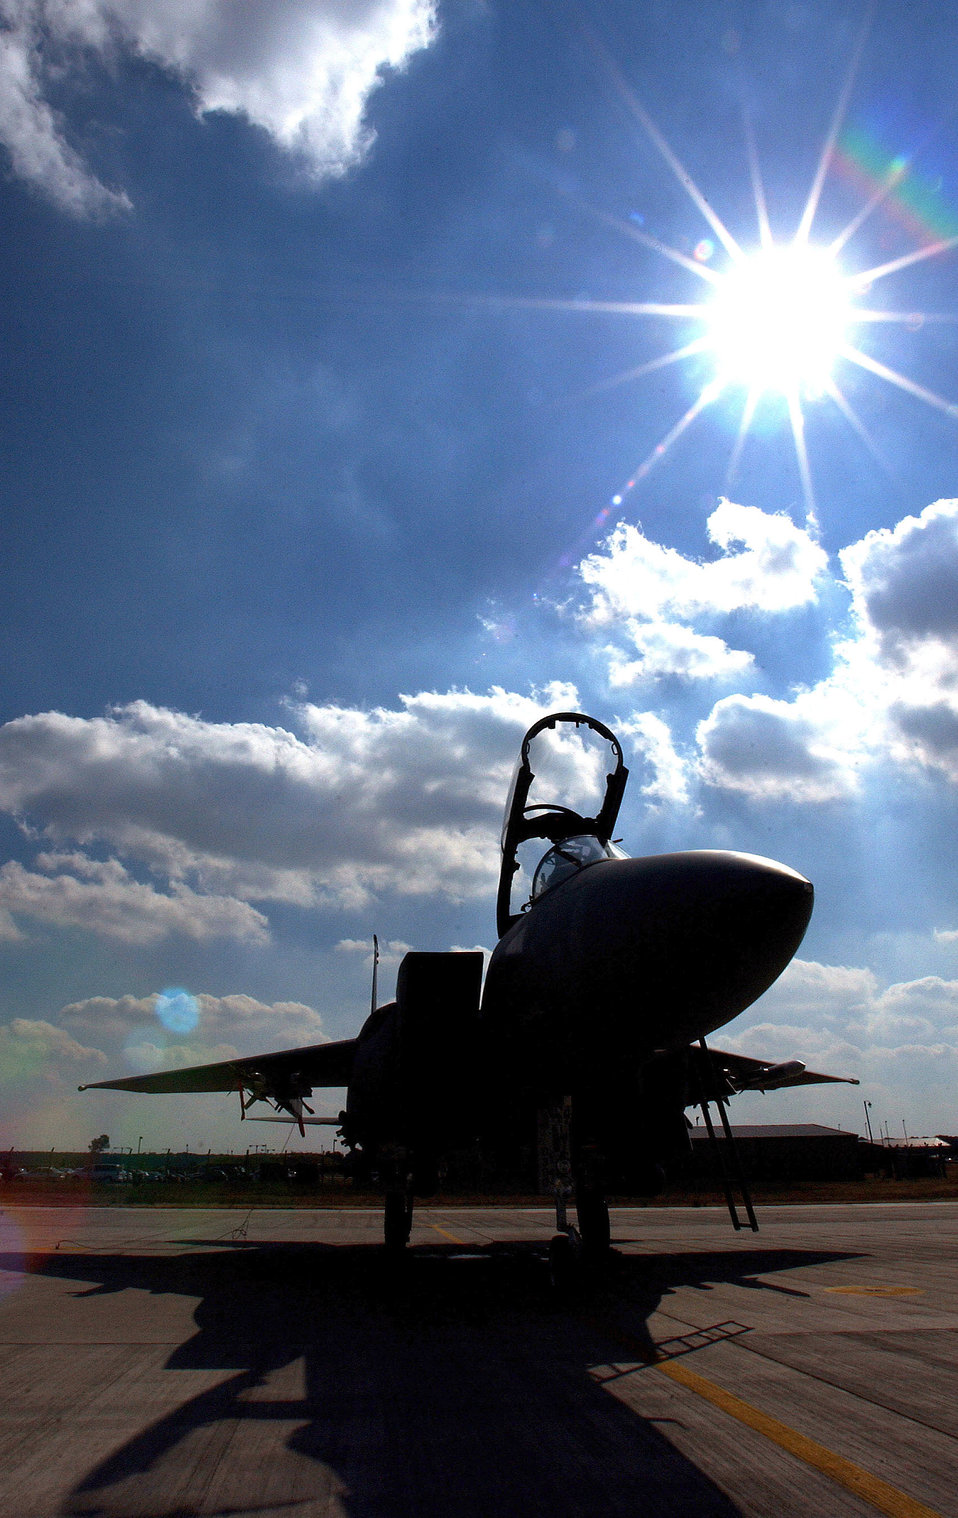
Catchin' some rays

ROYAL AIR FORCE LAKENHEATH, England -- An F-15E Strike Eagle sits on the parking ramp prior to preflight and launch. The Strike Eagle is considered the most advanced two-seat tactical fighter aircraft in the world, and its radar system allows aircrews to pick out bridges and airfields from more than 80 miles away.